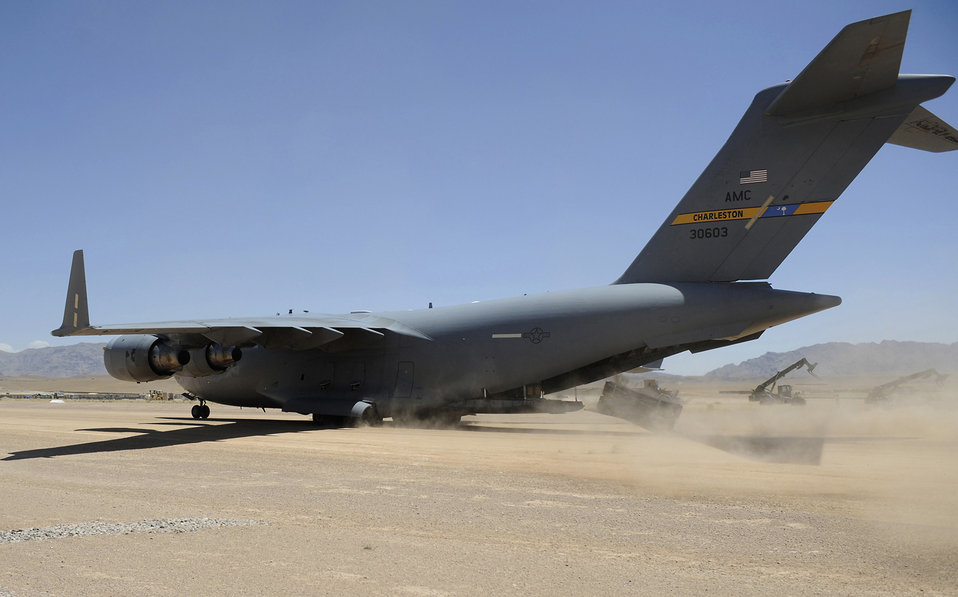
Fast drop

A pallet is combat off-loaded from a C-17 Globemaster III June 20 at Tarin Kowt Airfield, Afghanistan. The 816th Expeditionary Airlift Squadron is the first unit to conduct a combat off-load in theater.